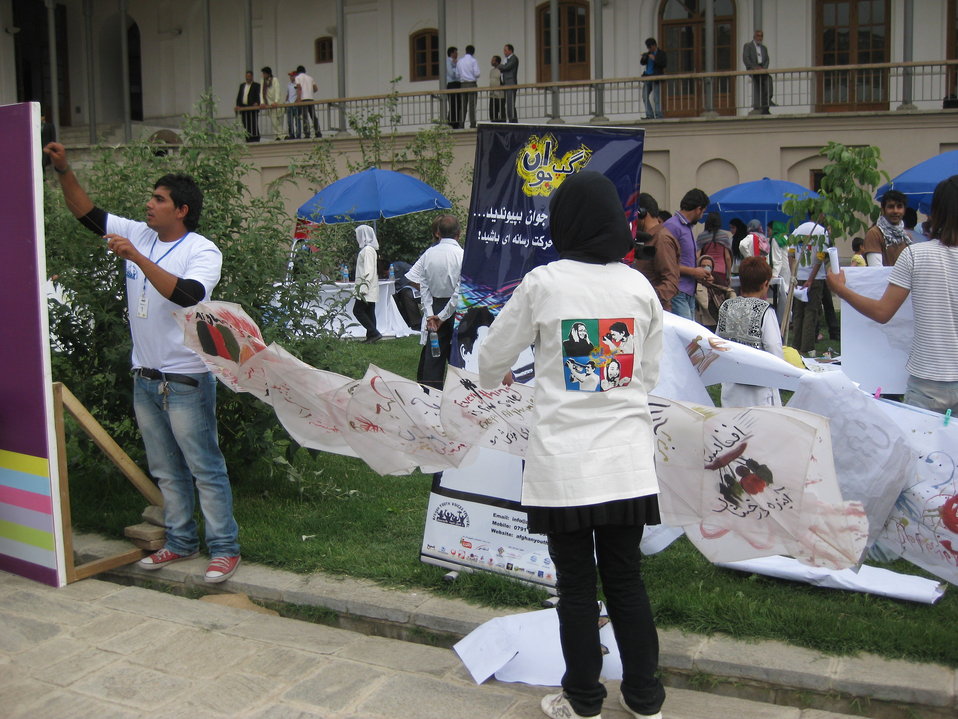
Afghan Youth Voices 081